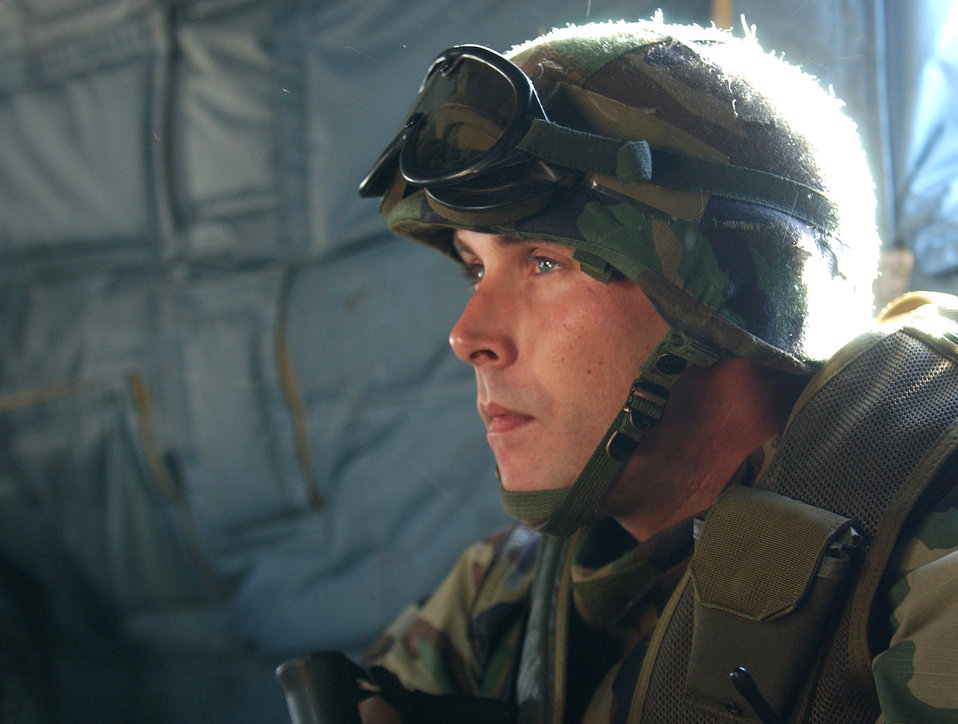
Joint training

AVIANO AIR BASE, Italy -- Senior Airman Matthew Kuehne participates in joint helicopter deployment training with the U.S. Air Force, Navy and the Italian carabineri here recently. Airman Kuehne is assigned to the 31st Security Forces Squadron.